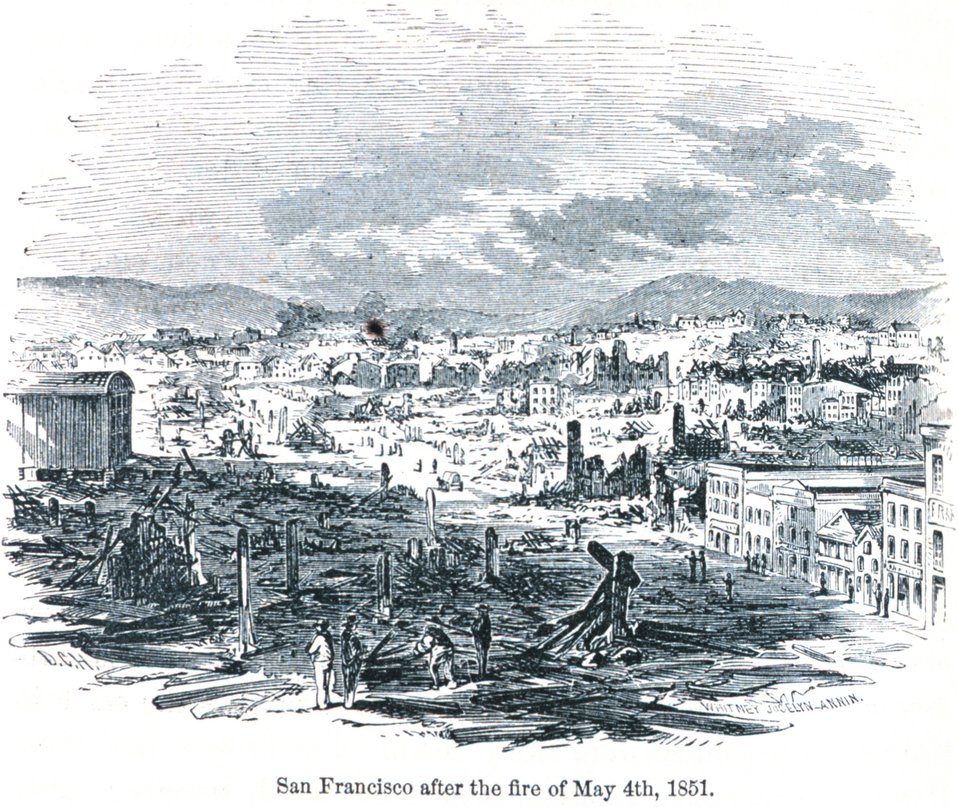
San Francisco after the fire of May 4th, 1850. In: 'The Annals of San Francisco'. Frank Soule, John Gihon, and James Nesbit. 1855. Page 332. D. Appleton & Company, New York. F869.S3.S7 1855.